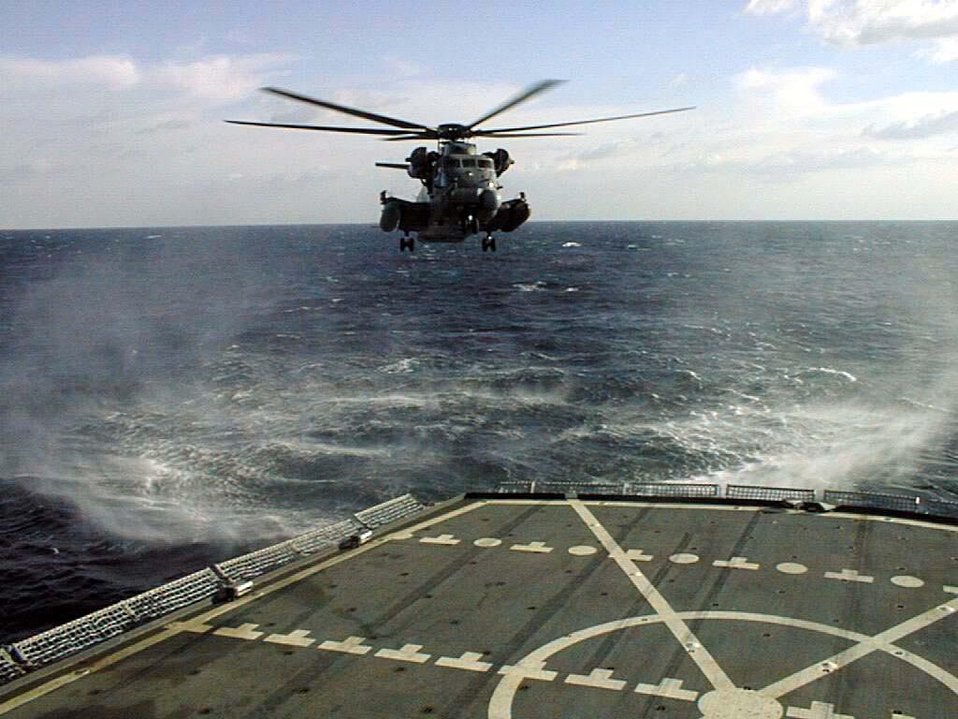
Medical evacuation

OVER THE MEDITERRANEAN SEA -- An MH-53J Pave Low helicopter from the 352d Special Operations Group's 21st Special Operations Squadron, lands aboard the USS Monongahela operating in the Mediterranean Sea Feb. 4. The helicopter, call sign SKAT 08, got an emergency call to evacuate a seaman with appendicitis for transport to the hospital in Lecce, Italy. The patient was transferred and is currently undergoing tests. The helicopter returned to Brindisi Air Station, Italy, without incident.